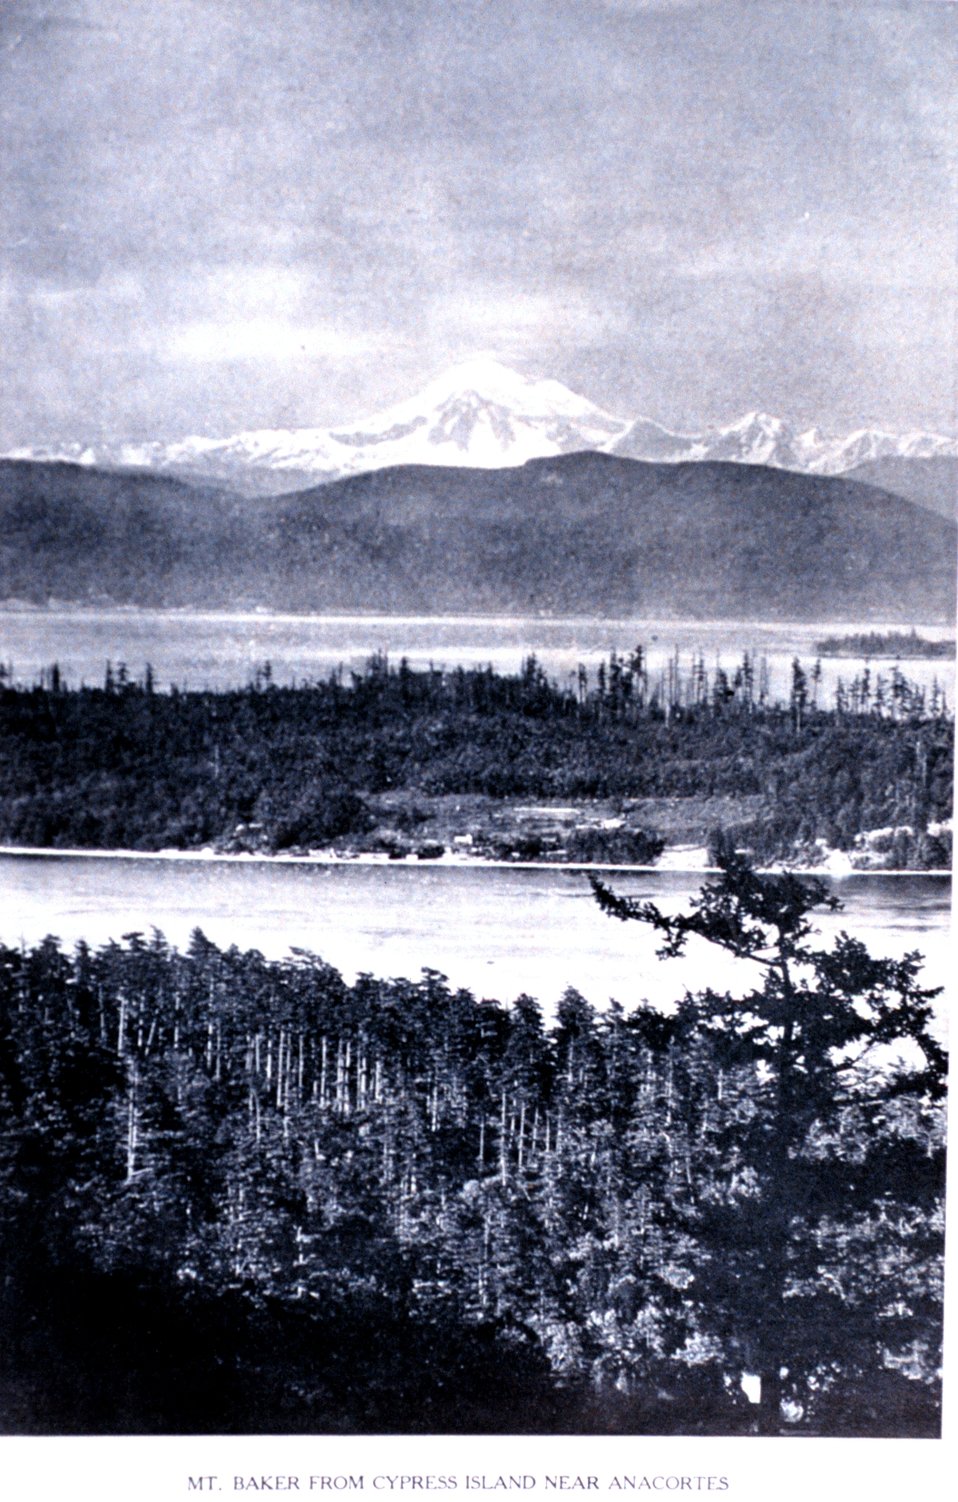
'Mt. Baker from Cypress Island, Near Anacortes'. In: 'Puget Sound and Western Washington Cities-Towns Scenery', by Robert A. Reid, Robert A. Reid Publisher, Seattle, 1912. P. 19.